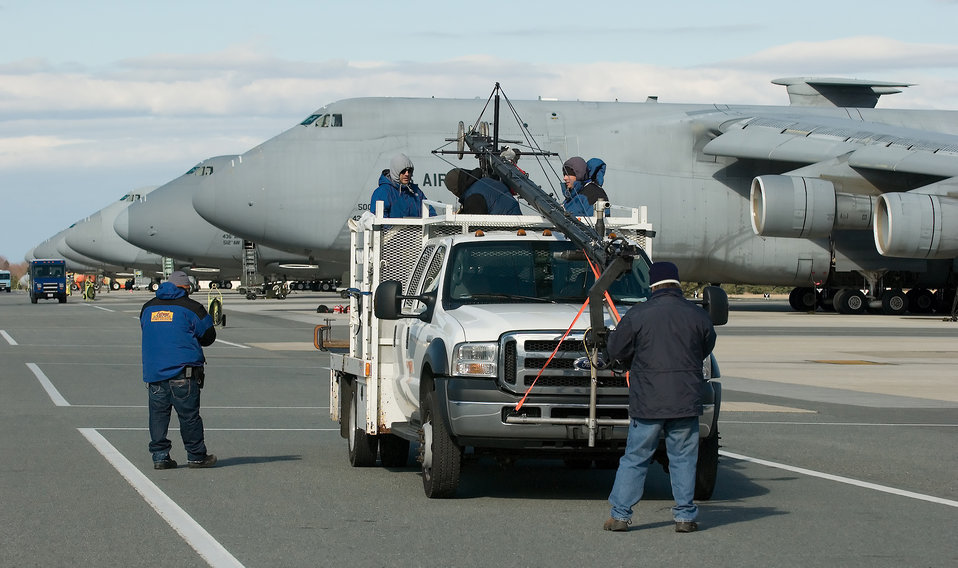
'Extreme Makeover' films at Dover

An